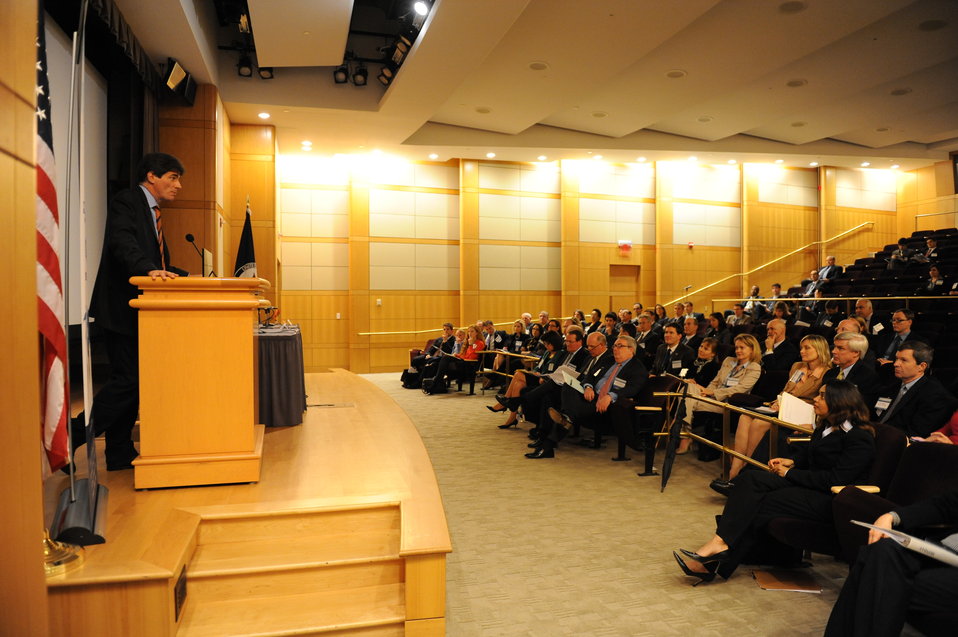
Assistant Secretary Fernandez Delivers Remarks at a Commercial Diplomacy Seminar

Assistant Secretary of State for Economic and Business Affairs Jose Fernandez delivers opening remarks at a Commercial Diplomacy Seminar for Desk Officers at the U.S. Department of State in Washington, D.C., on November 21, 2011.